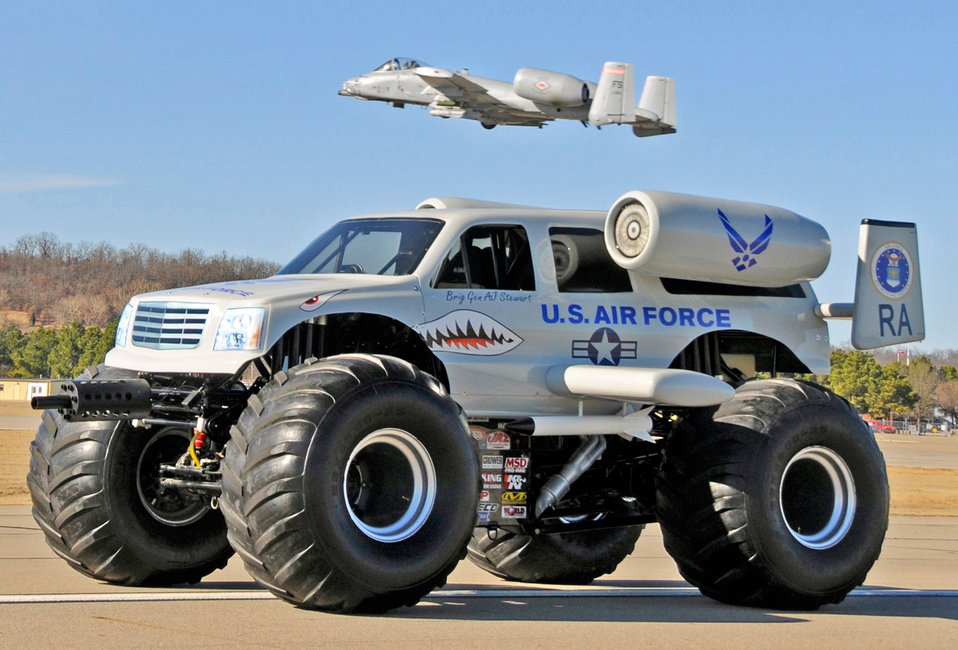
Charging through

The Air Force Recruiting Service's A-10 Monster Truck makes an appearance at the 2010 Wings Over Whiteman Air Show and Open House, Sept. 18 and 19, 2010, at Whiteman Air Force Base, Mo.